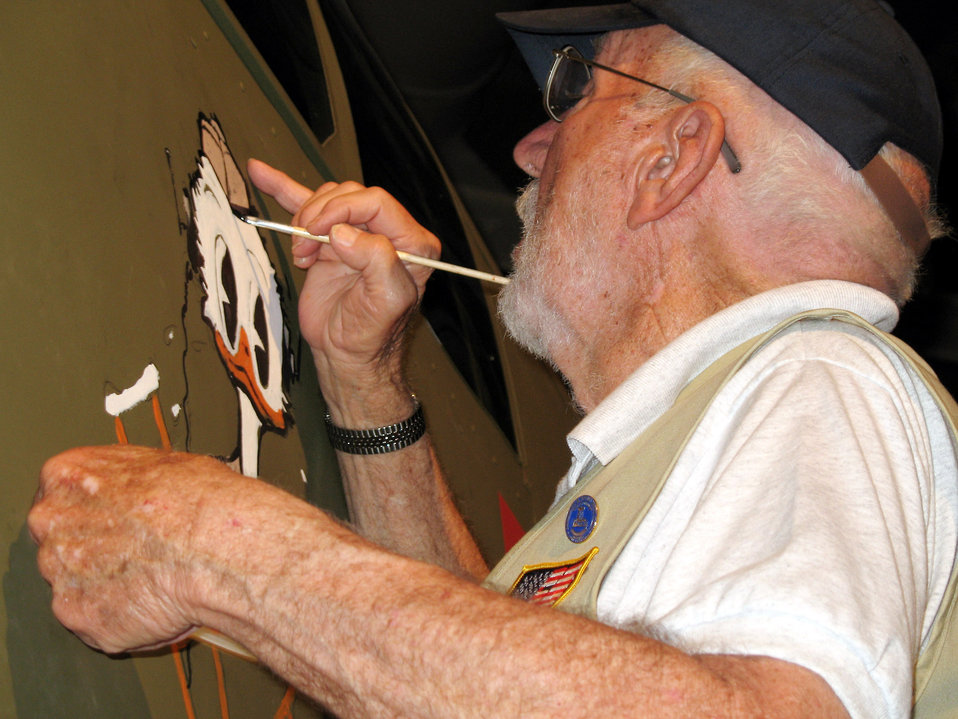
WWII veteran's artwork lives on at museum

Hal Olsen touches up the paint on a B-25 Mitchell Bomber April 19 at the Pacific Aviation Museum in Hawaii. In honor of the 65th anniversary of the Doolittle Raid over Tokyo, Mr. Olsen was recreating one of his original nose art pieces, for the B-25 flown by Lt. Ted Lawson, one of the pilots involved in the raid. The piece called